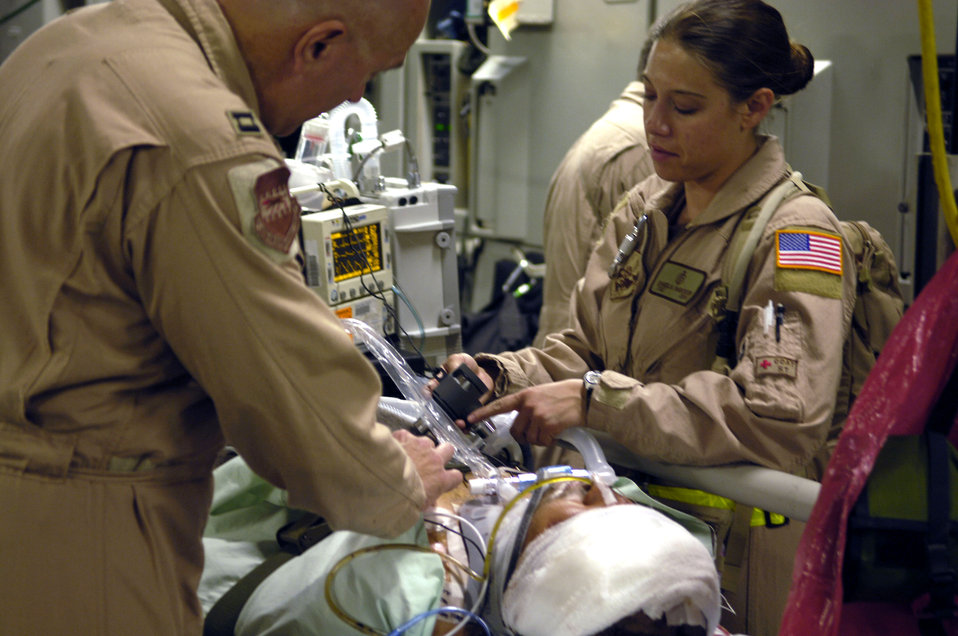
The best care in the air

Capt. Gary Novak and Tech. Sgt. Daniela Rabickow prepare a patient for aeromedical evacuation from Balad Air Base, Iraq, aboard a C-17 Globemaster III on Friday, June 9.